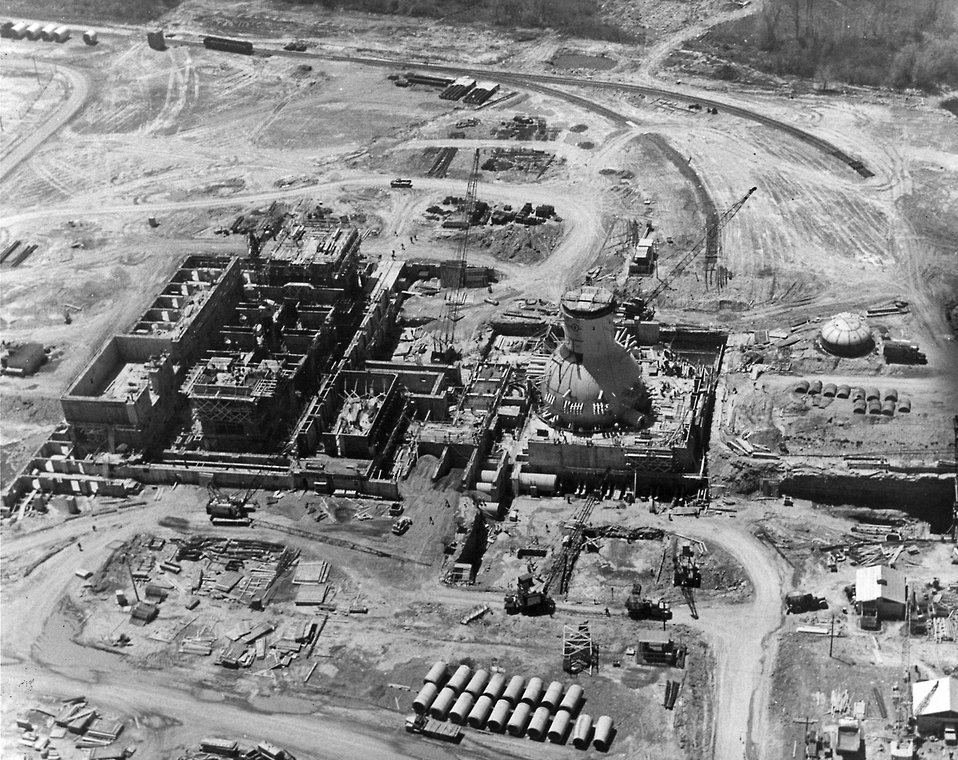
Aerial view of the Nine Mile Point Nuclear Power Plant, now under construction, shows part of its 1500-acre site six miles east of Oswego, New York. Circa 1966.